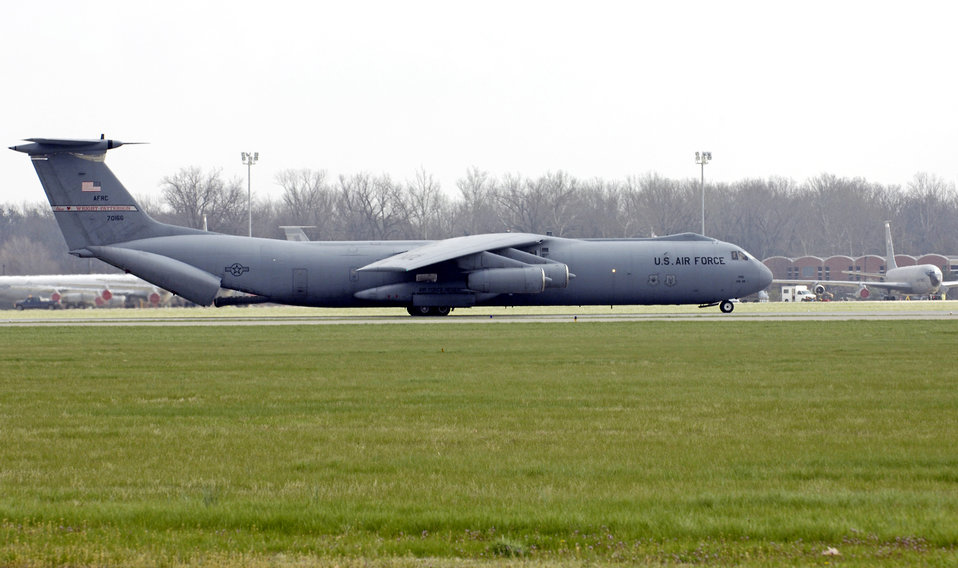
Final flight

A C-141C Starlifter from the 445th Airlift Wing lands at Scott Air Force Base, Ill., on Friday, April 7, 2006. The aircraft, tail number 67-0166, made its final flight. It will take its place among other Air Mobility Command aircraft at the heritage airpark being built this year. The 445th, based at Wright-Patterson Air Force Base, Ohio, is converting from the Starlifter to the C-5 Galaxy.